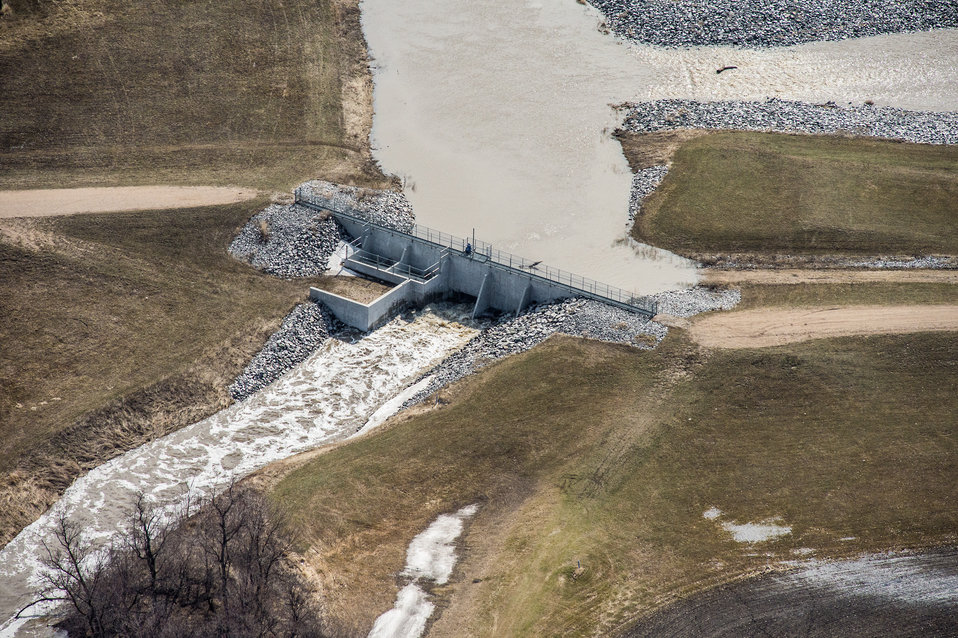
Snake River Diversion, a Public Law PL83-566 Small Watershed Program, at Warren, MN, on Wednesday, May 1, 2013. For information about this and other programs from the USDA Red River Basin Initiative (RRBI) please see www.mn.nrcs.usda.gov/news/features13/RRBI.html.